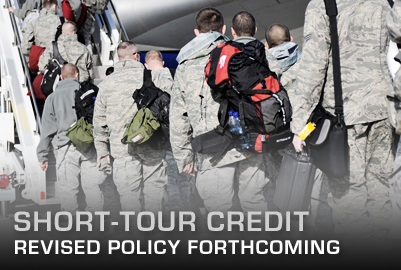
Short-Tour Credit